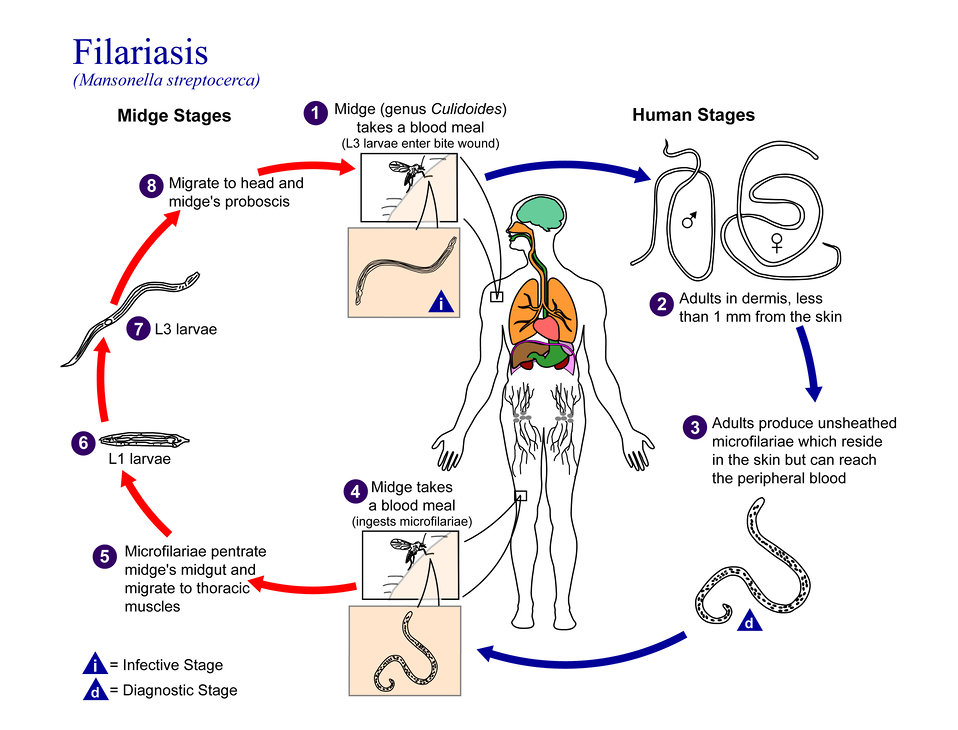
This is an illustration of the life cycle of Mansonella streptocerca, one of the causal agents of Filariasis.